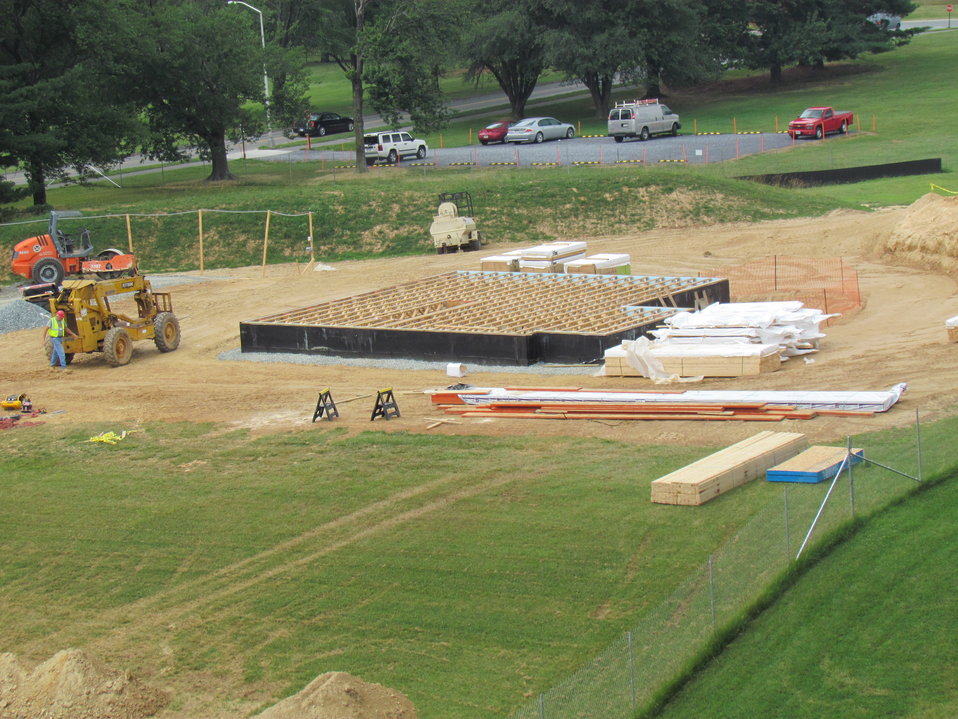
Net-Zero Energy Residential Test Facility - Construction photo showing open web floor trusses in place and water proofing applied to exterior basement walls.